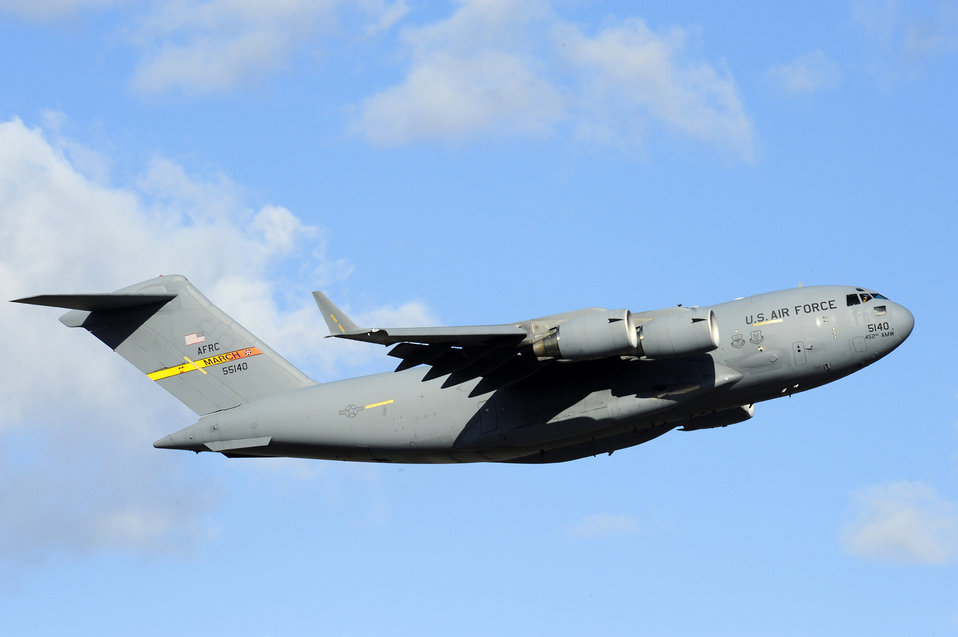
C-17 on a mission

A C-17 Globemaster III takes off March 22, 2011, from Grant County International Airport in Moses Lake, Wash., on a mission in support of Operation Odyssey Dawn.